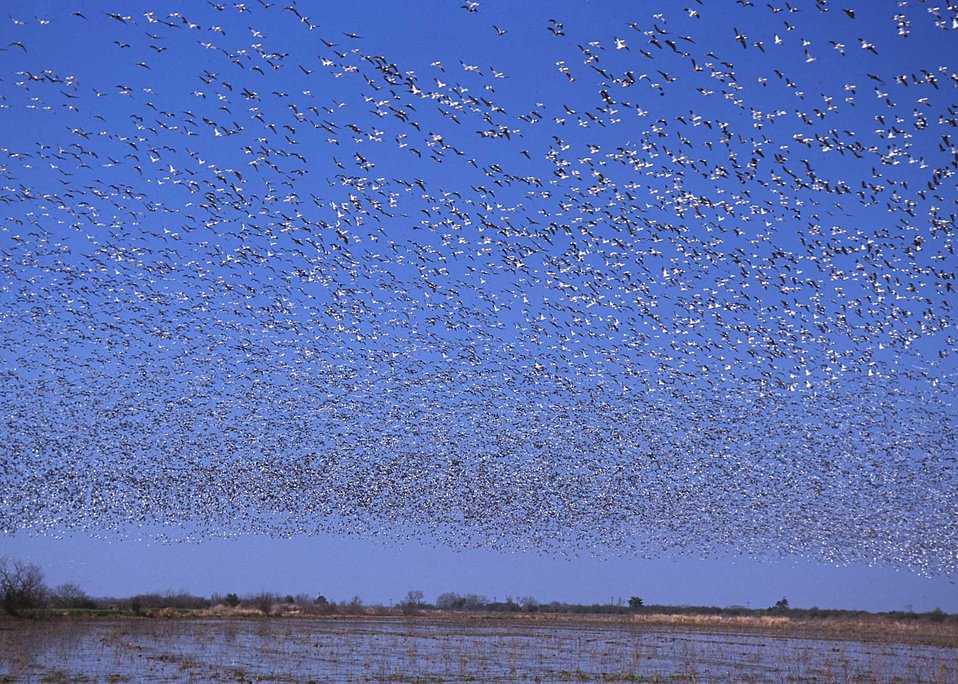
Flooded croplands near Gueydan, Louisiana attract thousands of geese in the winter.